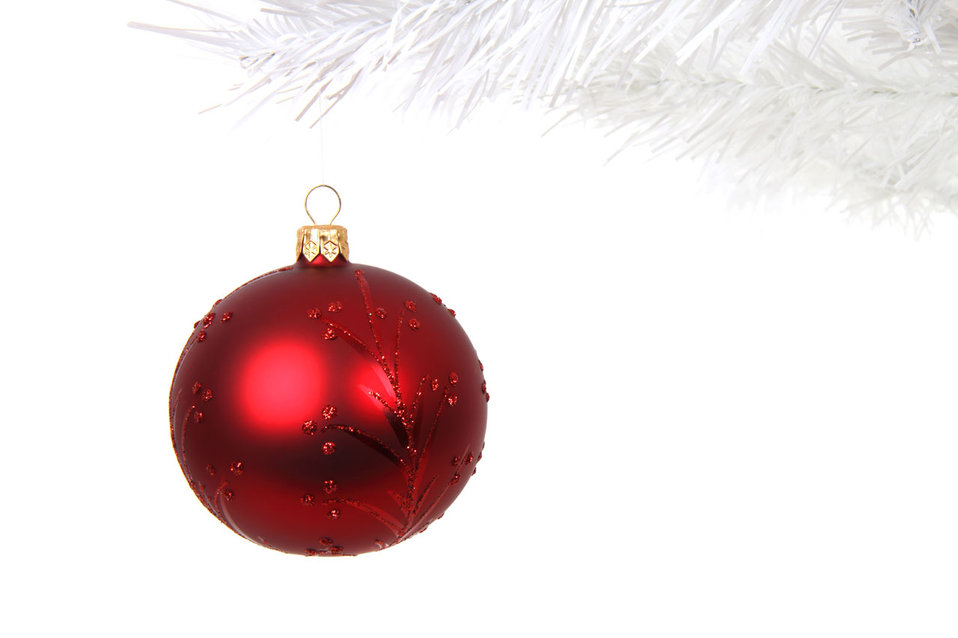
Red bauble on branch

Red bauble on white branch isolated on white background.